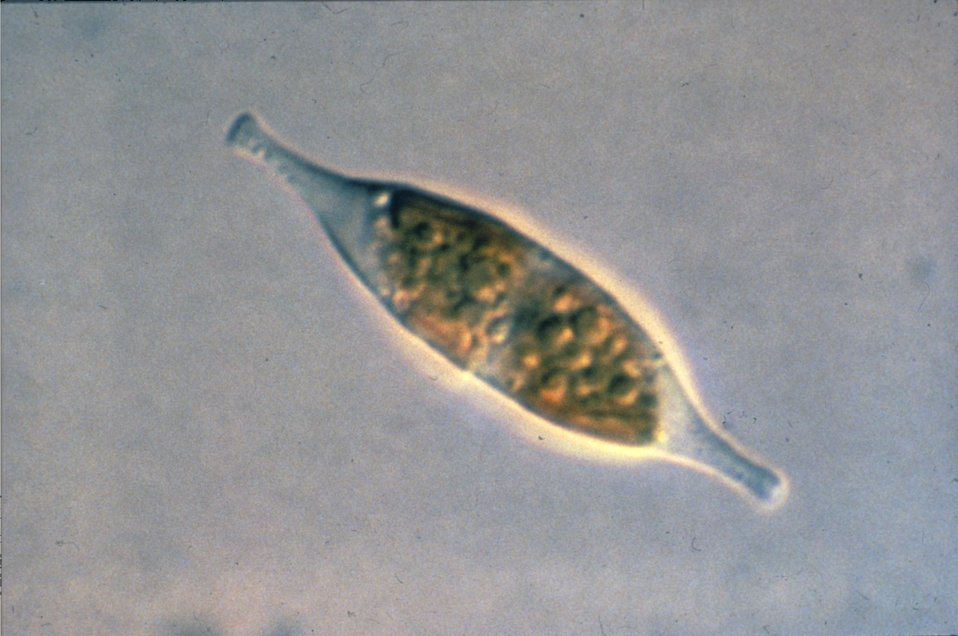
RESEARCH CONDUCTED ON MICROALGAE, ORGANISMS FROM WHICH A DIESEL-LIKE FUEL CAN BE DERIVED.

THE SOLAR FUELS RESEARCH DIVISION AT NREL INVOLVES BIOTECHNOLOGY, CHEMICAL CONVERSION AND PHOTOCONVERSION. BIOTECHNOLOGY RESEARCH FOCUSES ON CREATING TECHNOLOGY FOR CONVERTING RENEWABLE BIOMASS FEEDSTOCKS TO FUELS AND CHEMICALS. NREL RESEARCHERS ARE STUDYING CONVERSION OF BIOMASS AND WASTES THROUGH CHEMICAL PROCESSES. AREAS OF RESEARCH IN CHEMICAL CONVERSION CONCENTRATE ON THE THERMO- CHEMICAL PROCESS, ELECTROCHEMISTRY AND FUEL CELLS. RESEARCHERS IN THE AREA OF PHOTOCONVERSION CONDUCT BASIC STUDIES ON DIRECT CONVERSION OF SOLAR ENERGY THROUGH PHOTO- BIOLOGY, PHOTOCHEMISTRY, PHOTOELECTROCHEMISTRY, AND SYNTHESIS AND CATALYSIS.